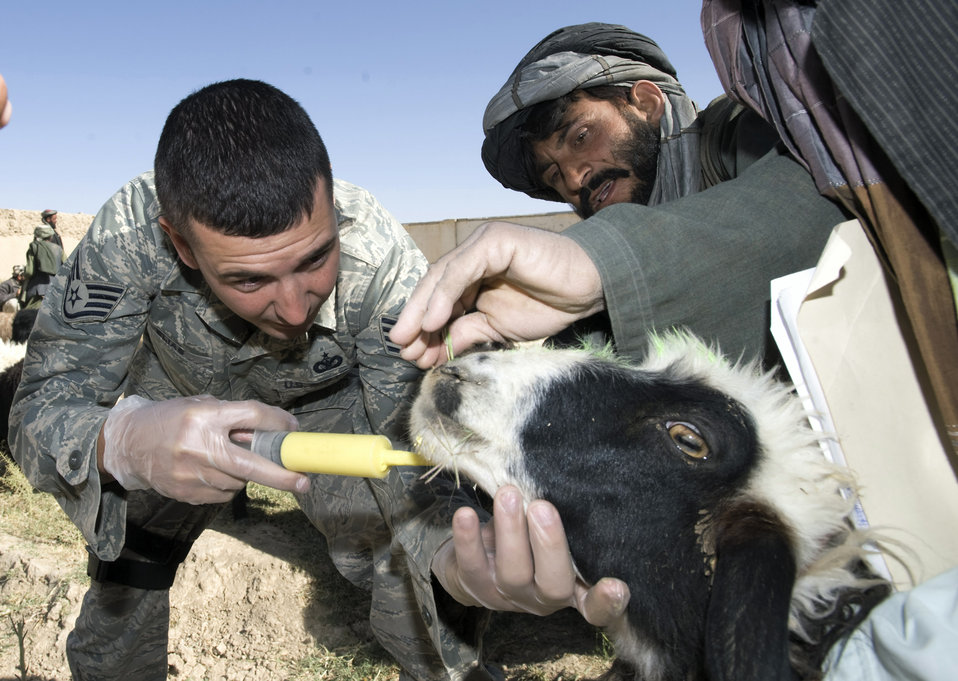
Veterinary care helps build relations with nomadic tribe

Staff Sgt. Don Elias deworms livestock during a veterinary medical outreach conducted by the Zabul Provincial Reconstruction Team Oct. 17 in Qalat, Afghanistan. The PRT members offered free deworming and vitamin supplements. Sergeant Elias, a native of Buffalo, N.Y., is deployed from Wright-Patterson Air Force Base, Ohio.